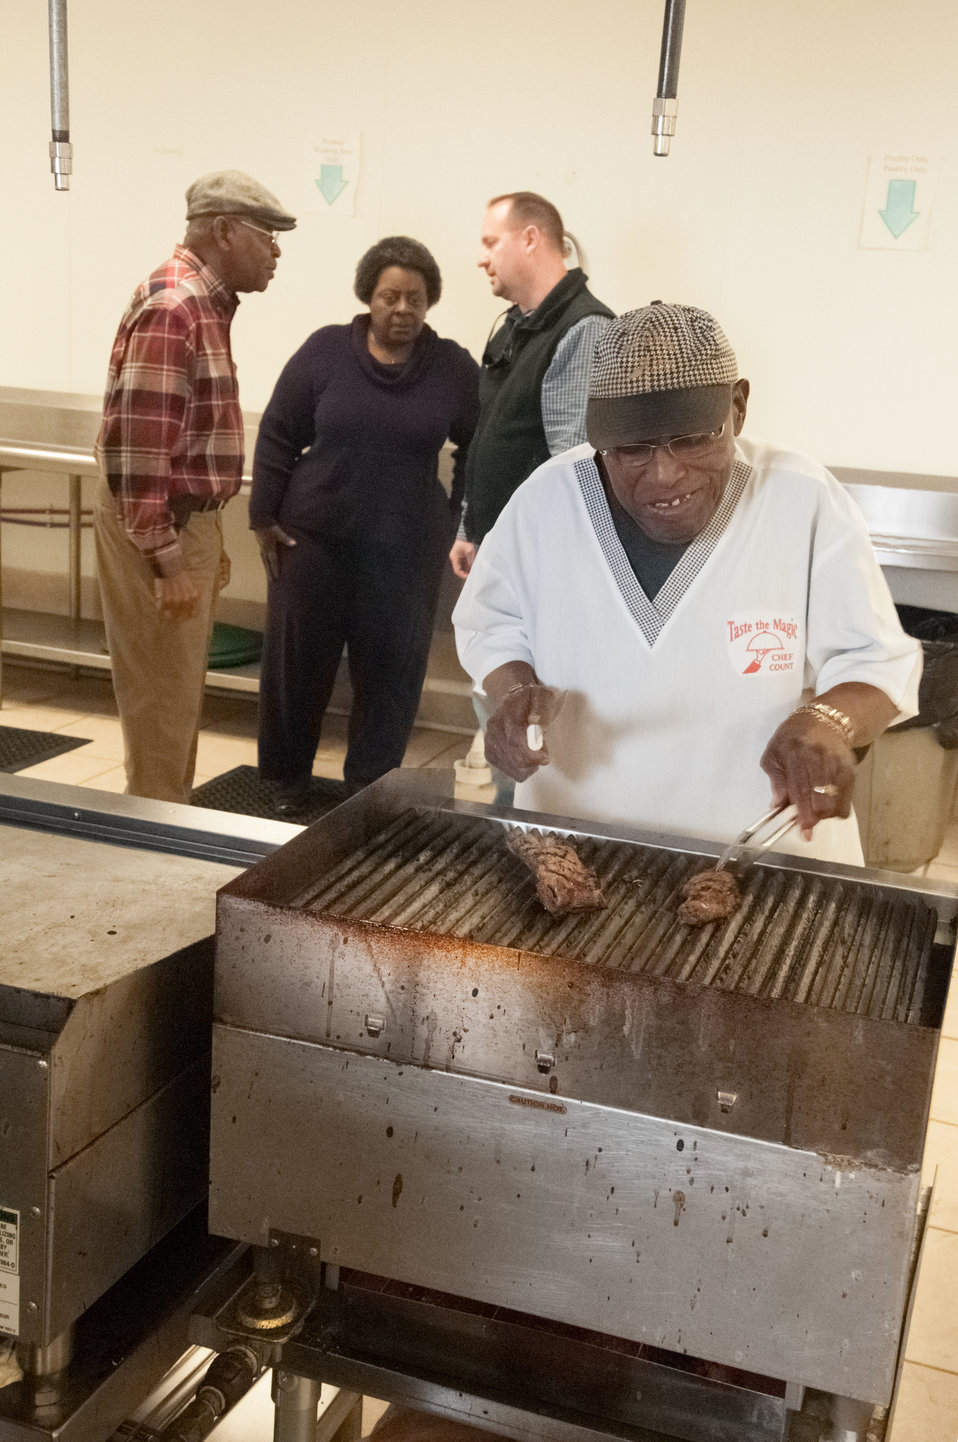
(L to R) East Baker Historical Society President David Cowart, East Baker Historical Society Assistant in Oversight Linda Riggins, and U.S. Department of Agriculture (USDA) Strike Team Leader Chris Groskreutz, discuss the operation of the community center as Chef Count Lofton prepares beef brisket at a grill at the East Baker Historical Society Community Center in Newton, Baker County, GA on Mar. 7, 2013. The East Baker Historical Society Community Center secured a U.S. Department of Agriculture (USDA) Rural Development (RD) Community Facilities (CF) Loan for the kitchen that enabled residents to prepare catered meals and to prepare and package food products. The USDA Strike Force Initiative has designated Baker County, GA as a Strike Force county selected to receive assistance to relieve persistent poverty in historically high-poverty counties.